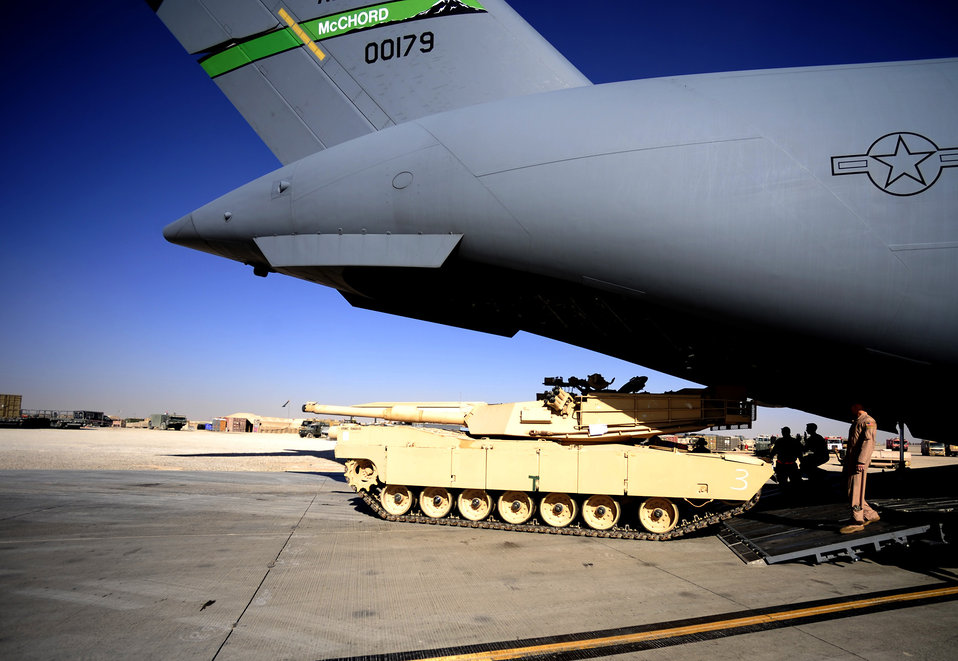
Heavy load arrival

A C-17 Globemaster III delivers a Marine Corps M1A1 Abrams tank to Afghanistan Nov. 28, 2010, in support of Operation Enduring Freedom. The Globemaster is assigned to the 816th Expeditionary Airlift Squadron at an air base in Southwest Asia.